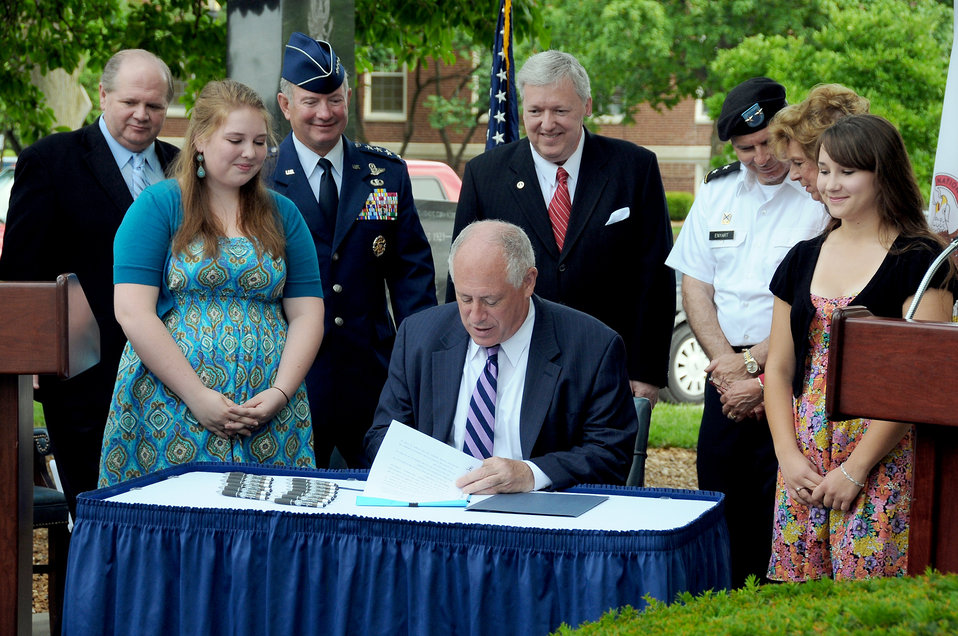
Help for military children

Illinois Gov. Pat Quinn signs the Intestate Compact on Education Opportunity for Military Children into law June 28, 2010, at Scott Air Force Base, Ill. Witnessing the signature are Illinois State Rep. Thomas Holbrook, family member Claire Krebs, commander of U.S. Transportation Command Gen. Duncan J. McNabb, Senior State Liaison for the Department of Defense Thomas Hinton, Adjutant General of the Illinois National Guard Maj. Gen. William Enyart, State Sen. Deanna Demuzio and family member Breanna Bence.